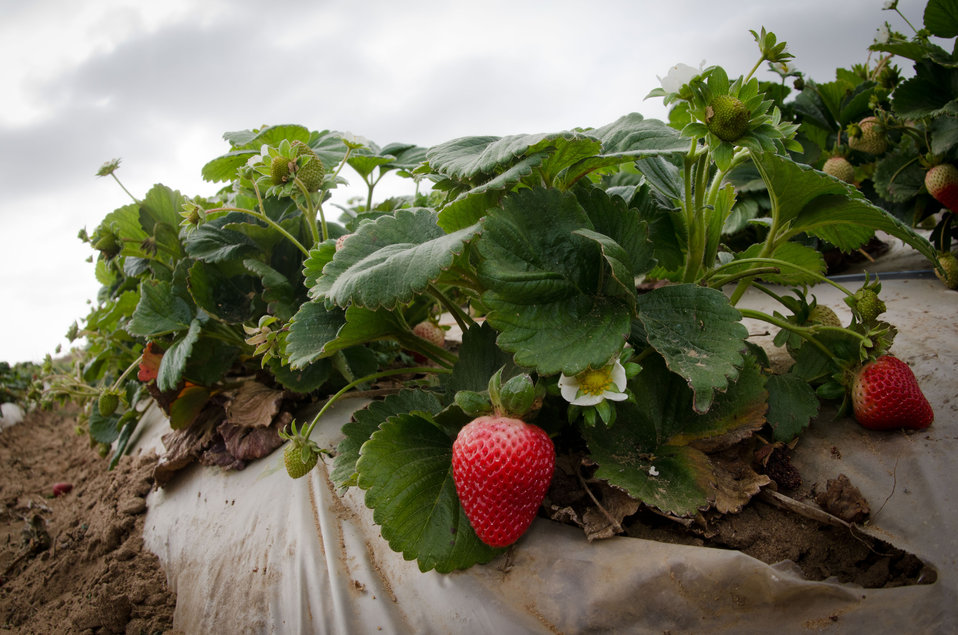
A strawberry farm near Castroville, CA, on Thursday, June 16, 2011.